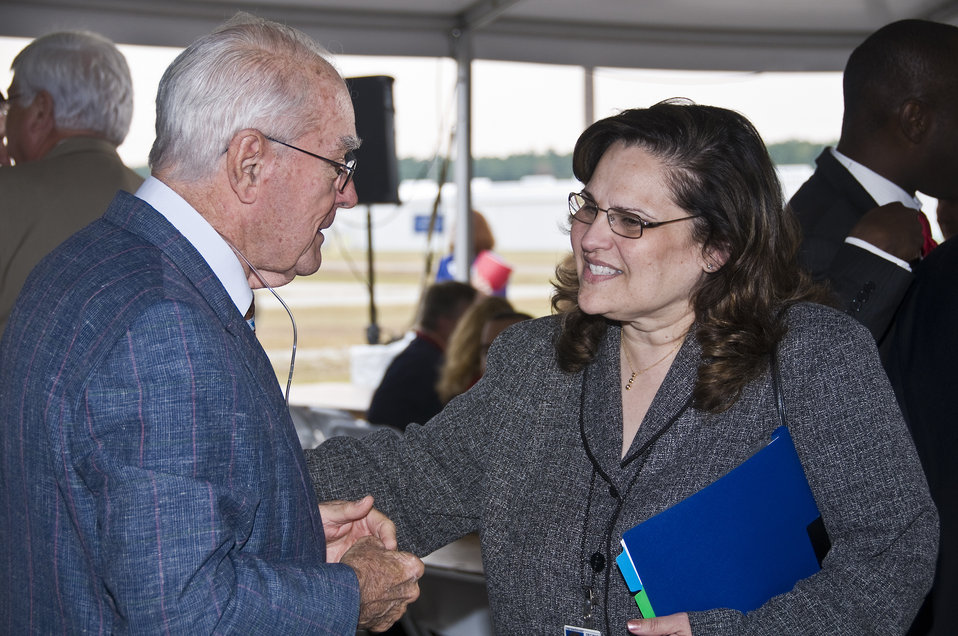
SRS M-Area Operable Unit Closing

Bernard Rusche, chairman of the South Carolina Governor’s Nuclear Advisory Council, congratulates Dr. Inés Triay, assistant secretary of Environmental Management, U.S. Department of Energy, at the closing celebration of the M-Area Operable Unit.